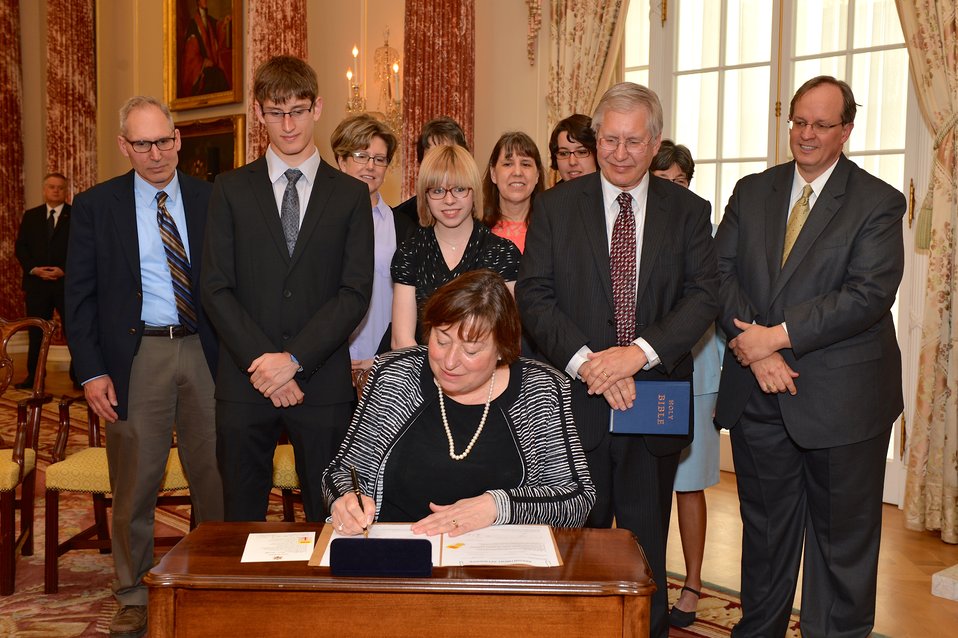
Under Secretary Novelli Signs Her Appointment Papers

With her family looking on, Catherine Novelli signs her appointment papers to become Under Secretary for Economic Growth, Energy, and the Environment at the U.S. Department of State in Washington, D.C., on April 22, 2014.